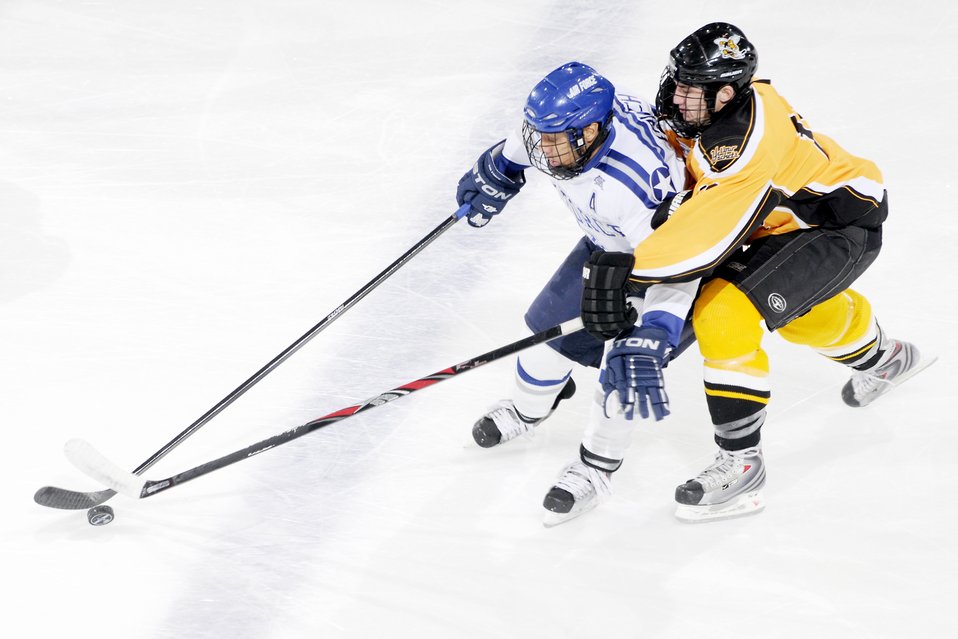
Falcons sweep hockey series

U.S. Air Force Academy senior forward Matt Fairchild tries to keep control of the puck during the first period of the Falcon's game against American International College at the Cadet Ice Arena Dec. 5, 2009. Air Force defeated AIC 6-2.